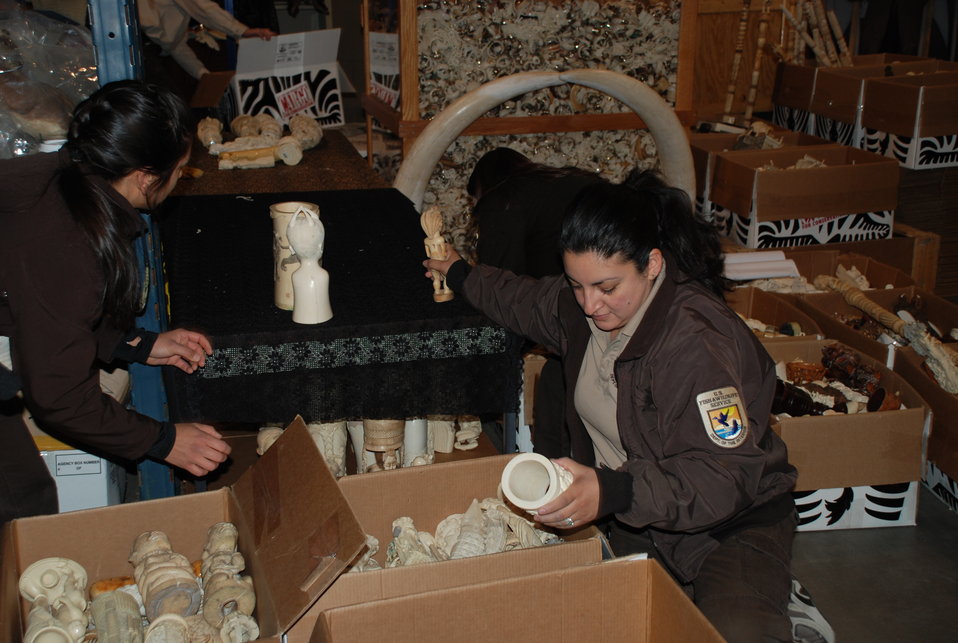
Before sunrise crews began loading ivory which FWS seized during undercover investigations of organized smuggling operations or confiscating at the U.S. border over the past 25 years.